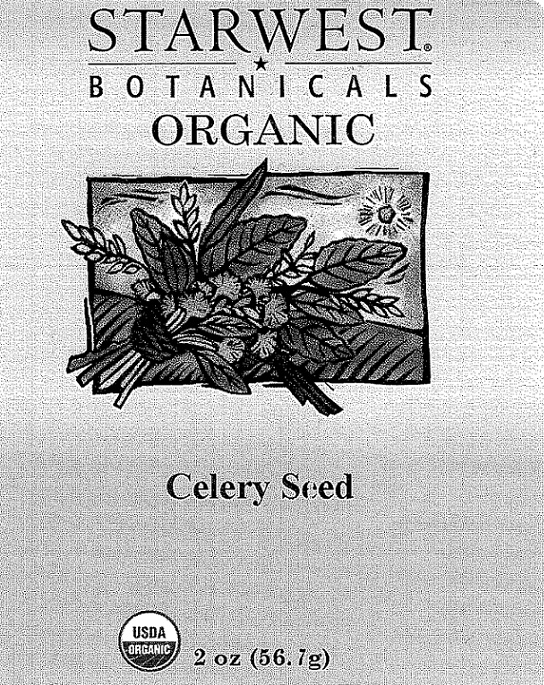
RECALLED - Organic Celery Seed

December 14, 2011 - Starwest Botanicals Recalls Starwest Organic Celery Seed. Due to Potential Salmonella Contamination.